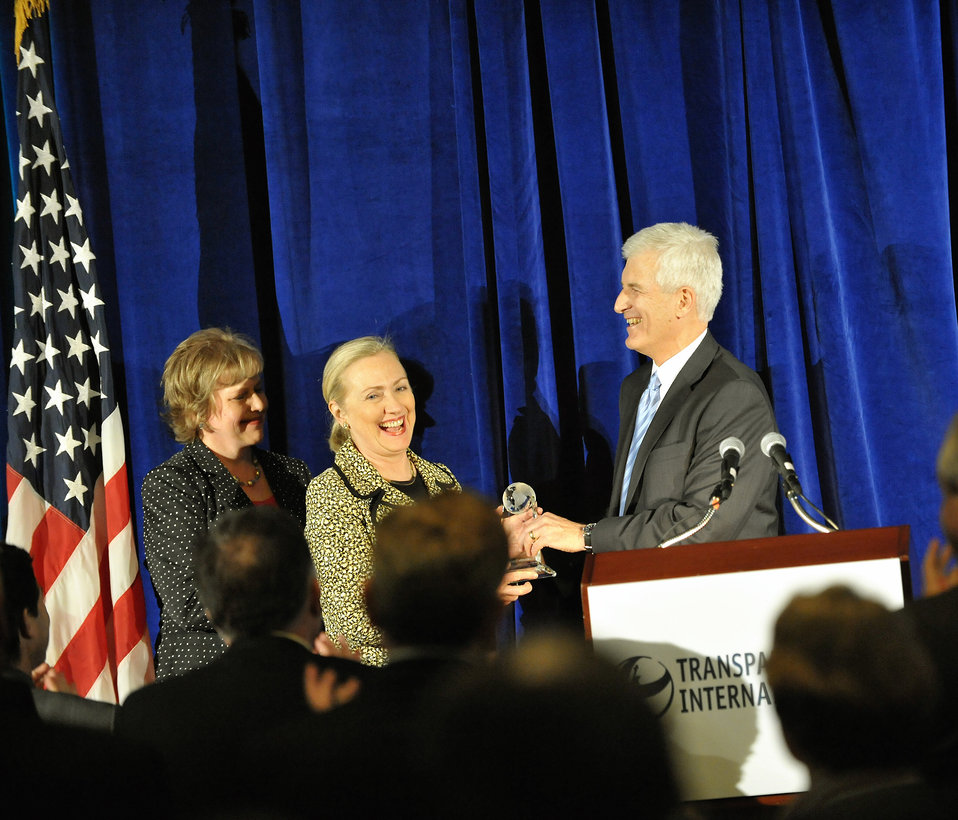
Secretary Clinton Receives Award at the Transparency International-USA's Annual Integrity Award Dinner

U.S. Secretary of State Hillary Rodham Clinton receives award at the Transparency International-USA's Annual Integrity Award Dinner in Washington, D.C. on March 22, 2012.